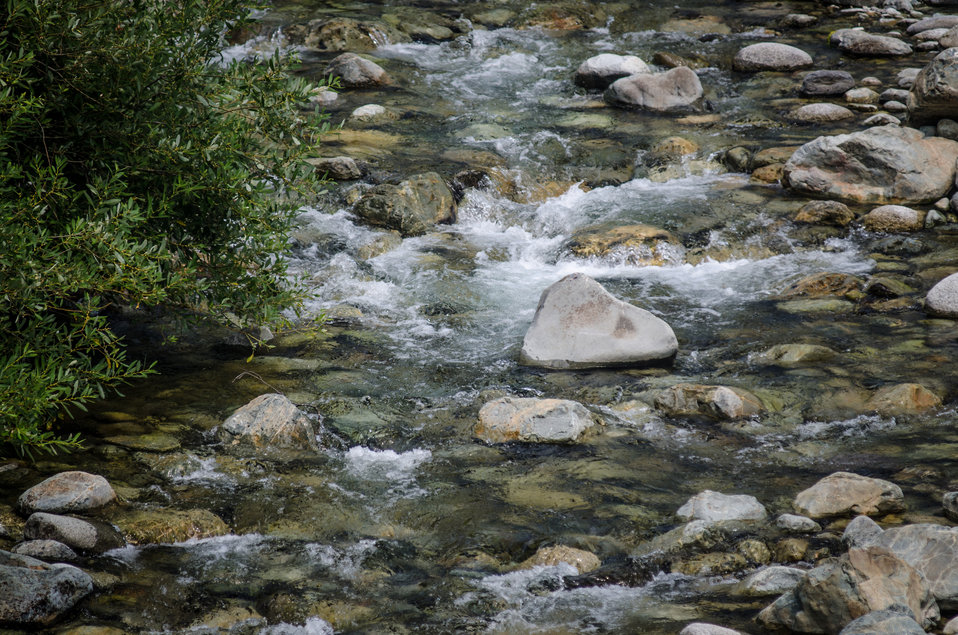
The clear waters of the North Fork Salmon River runs along the south side of Sawyers Bar (right), in Klamath National Forest, Calif., where the Salmon River Complex Wildlands Fire burns miles away to the northwest and west of Etna and Yreka, CA, on Tuesday, Aug. 6, 2013.